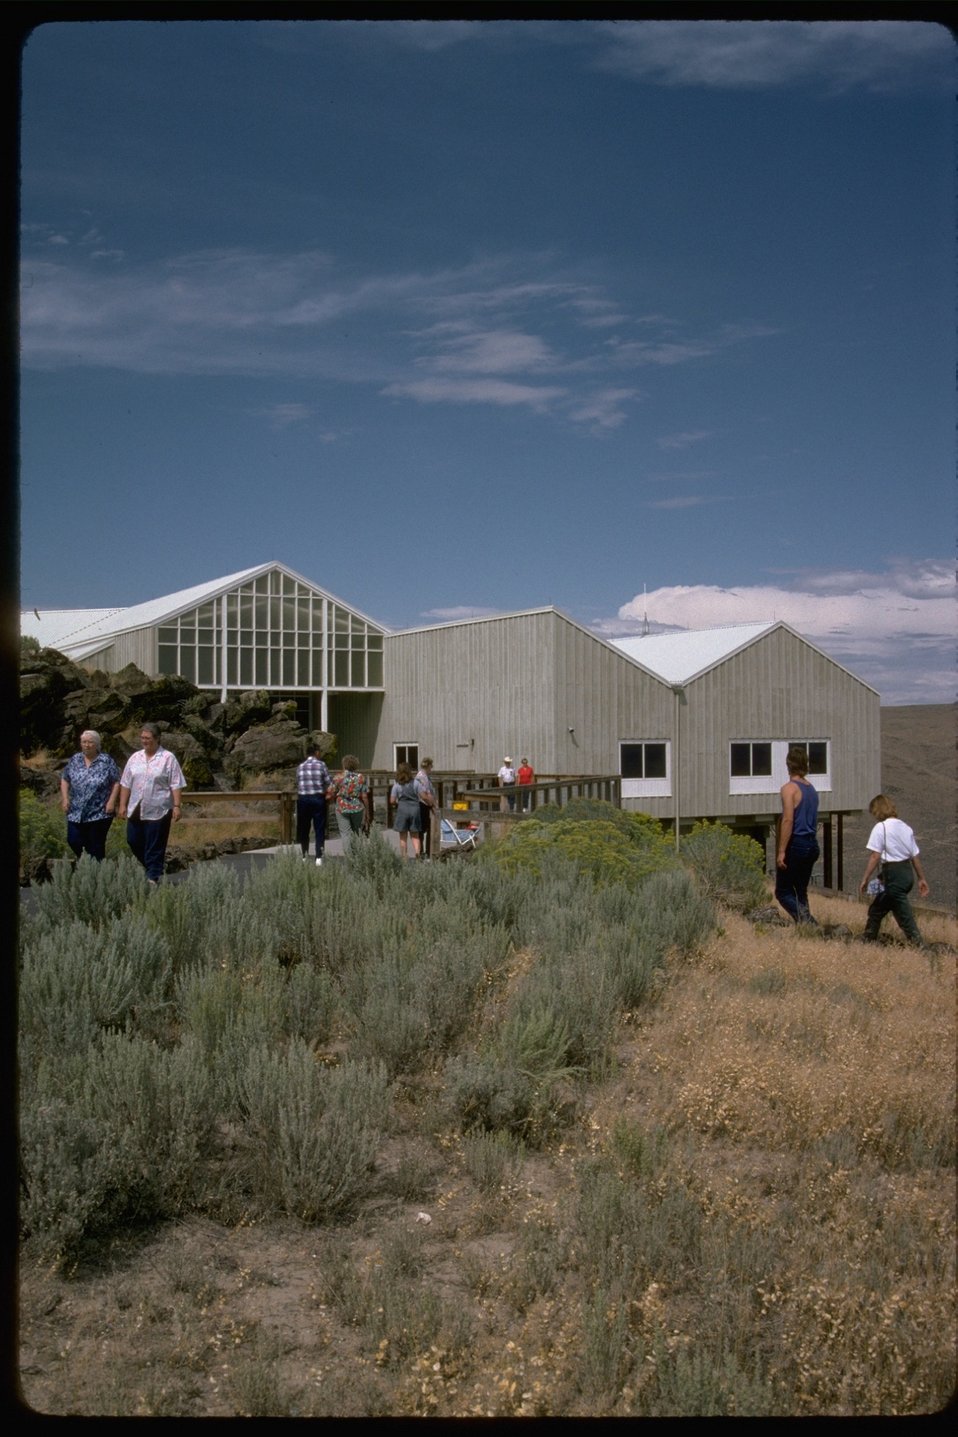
Exterior view of the National Historic Oregon Trail Interpretive Center.